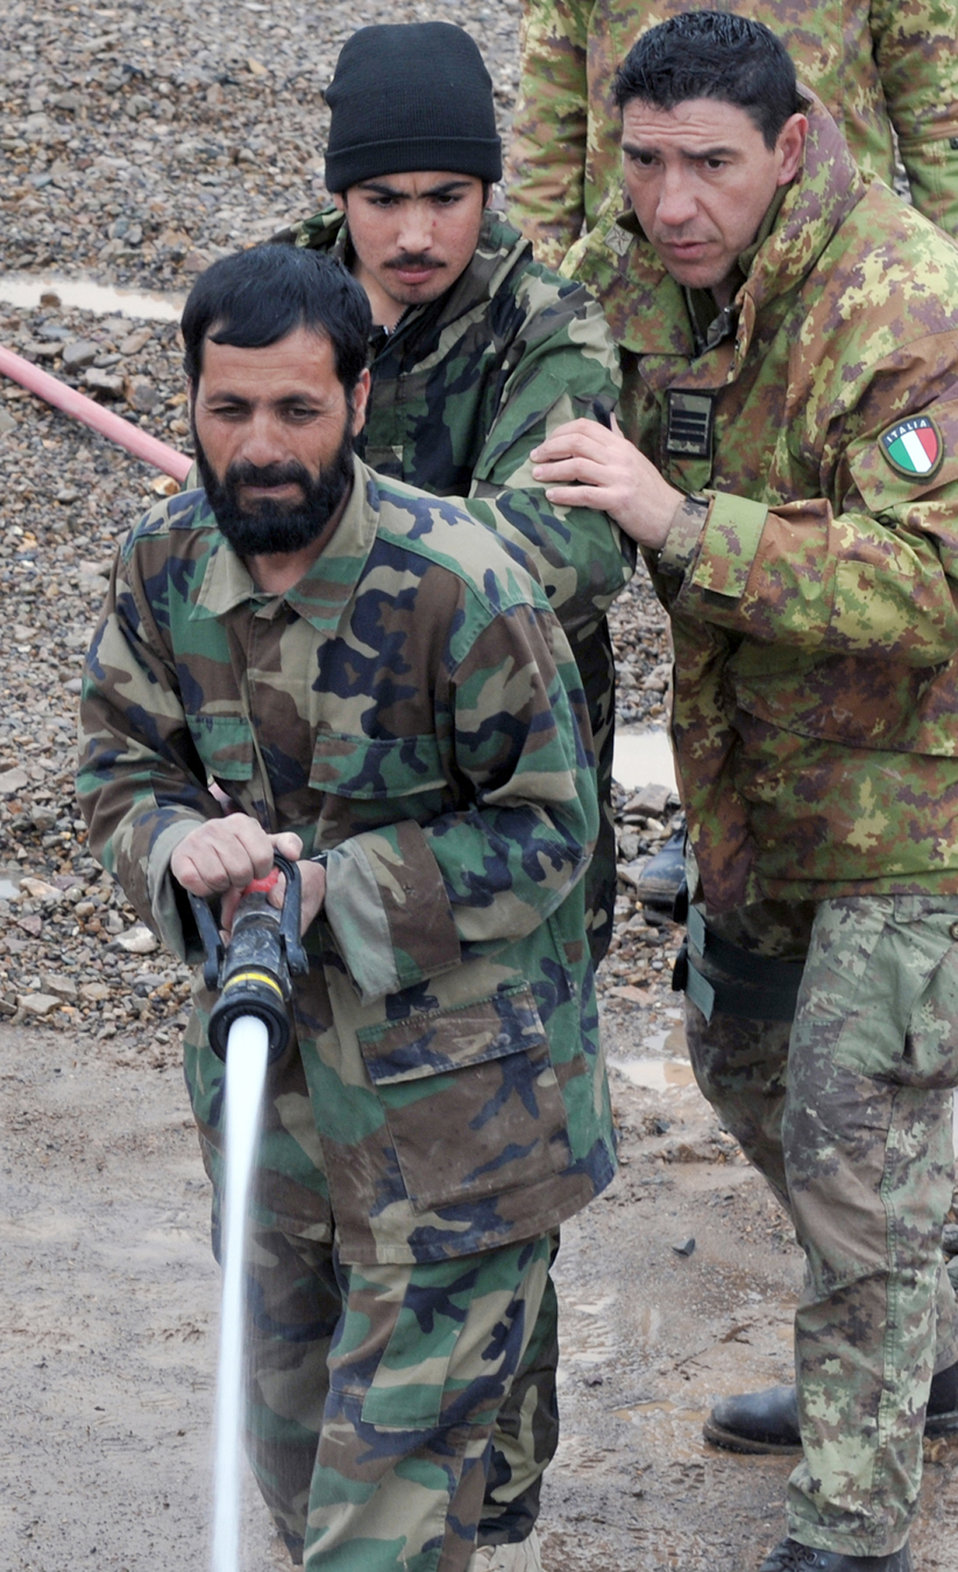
Advisory fire fighters key to AAF future

Afghan Airmen Abdull Fatho and Asis Ahmed extinguish a simulated helicopter crash as Italian air force 1st Marshall Ciro Tenace advises them March 6, 2011, during a training scenario at Shindad Air Base, Afghanistan. Marshall Tenace is an ITAF provider team adviser.